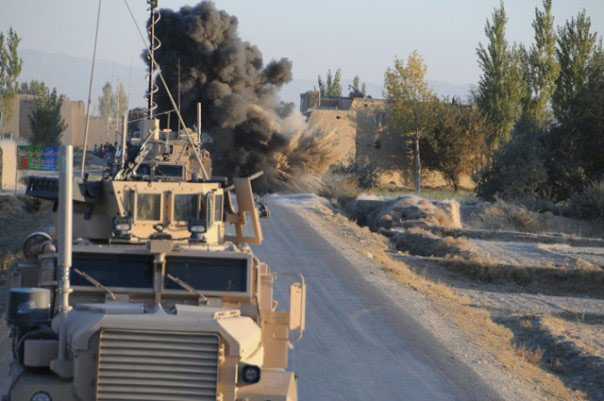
IED danger

An improvised explosive device explodes near a U.S. convoy. Then-Tech. Sgt. Rebecca Corey photographed events like this during her deployment to Afghanistan as a member of the provincial reconstruction teams working in the area.